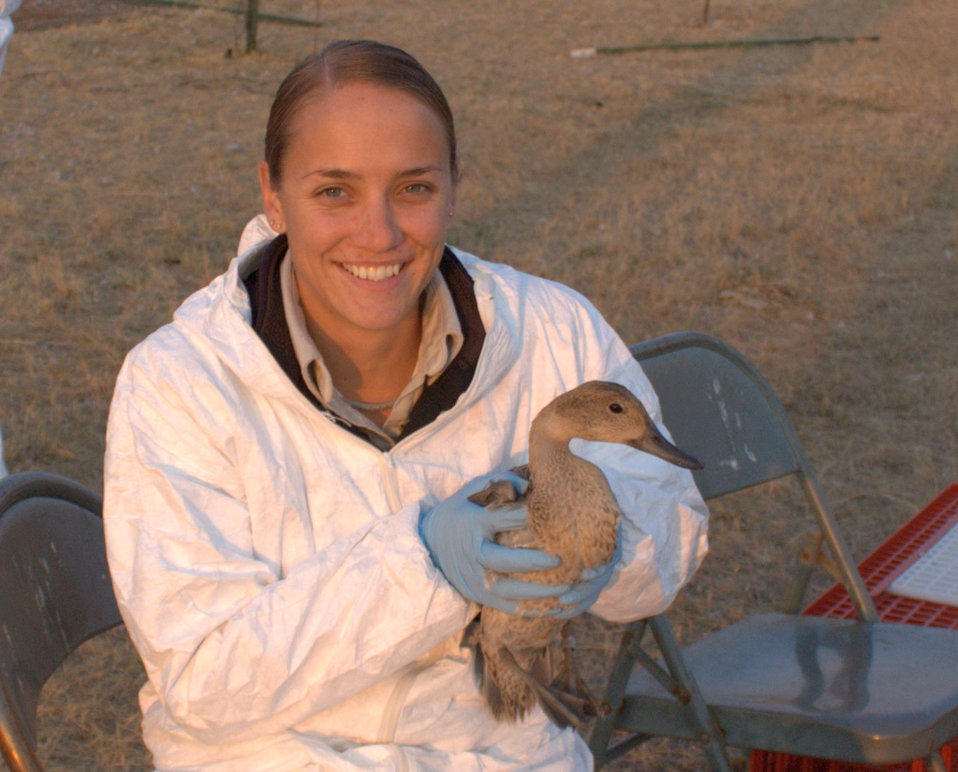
GYGO! - Duck Banding Style